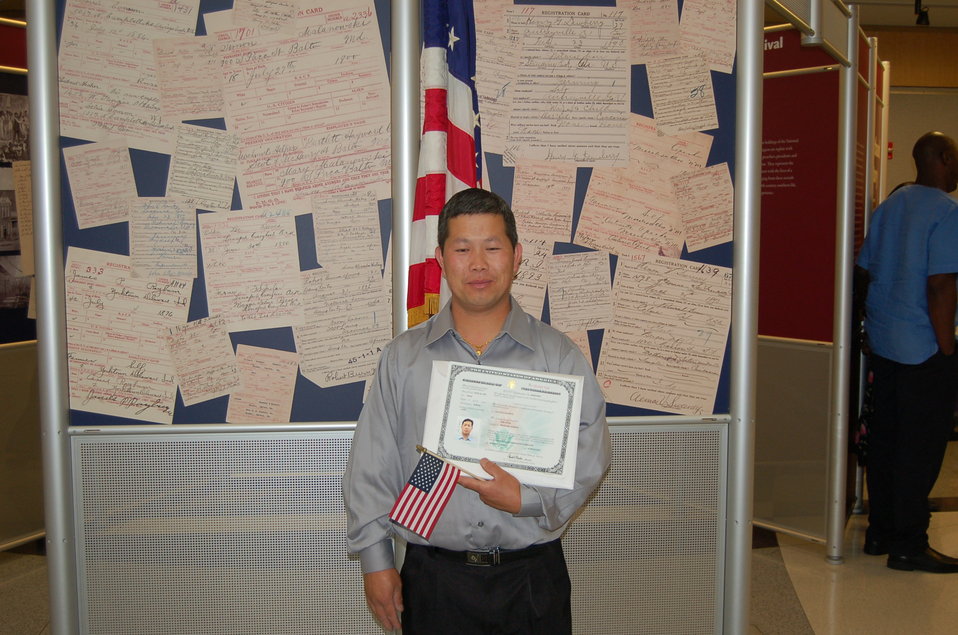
New Citizens